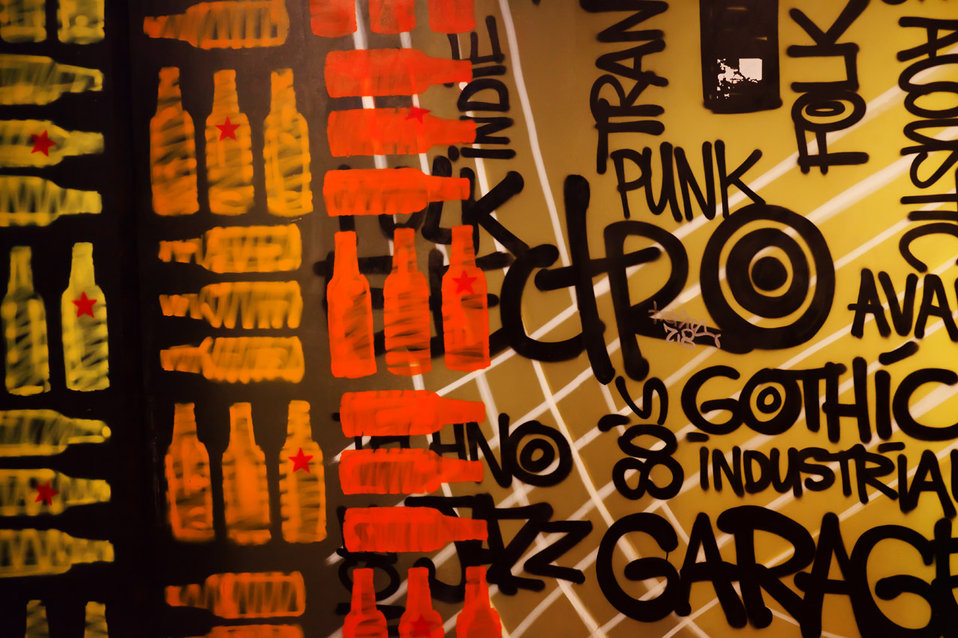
Graffiti bottle art.